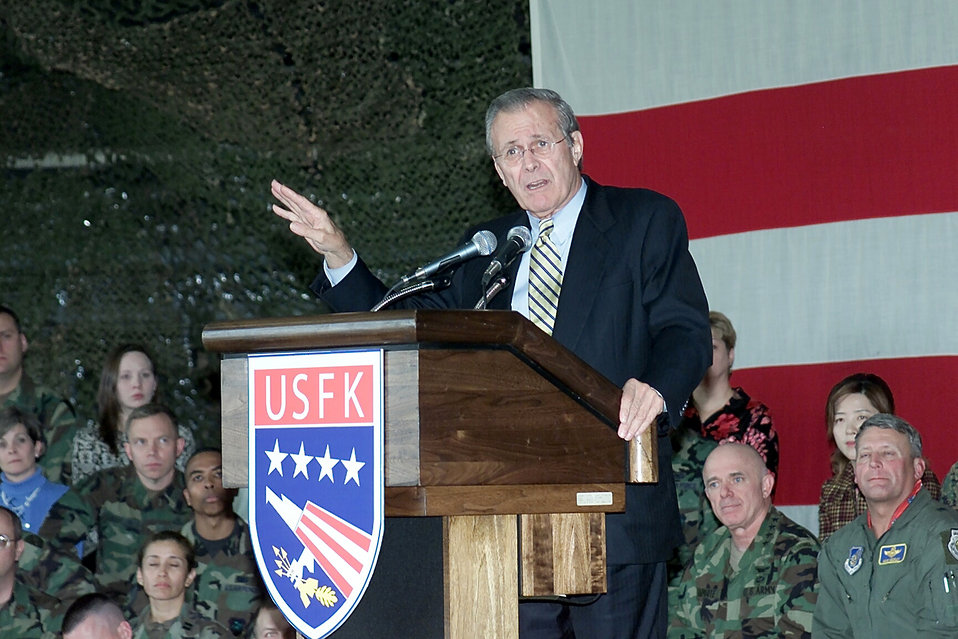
Rumsfeld speaks at Osan

OSAN AIR BASE, South Korea -- Secretary of Defense Donald H. Rumsfeld speaks with nearly 1,000 airmen, soldiers, sailors, Marines and family members here during a town hall meeting Nov. 18.